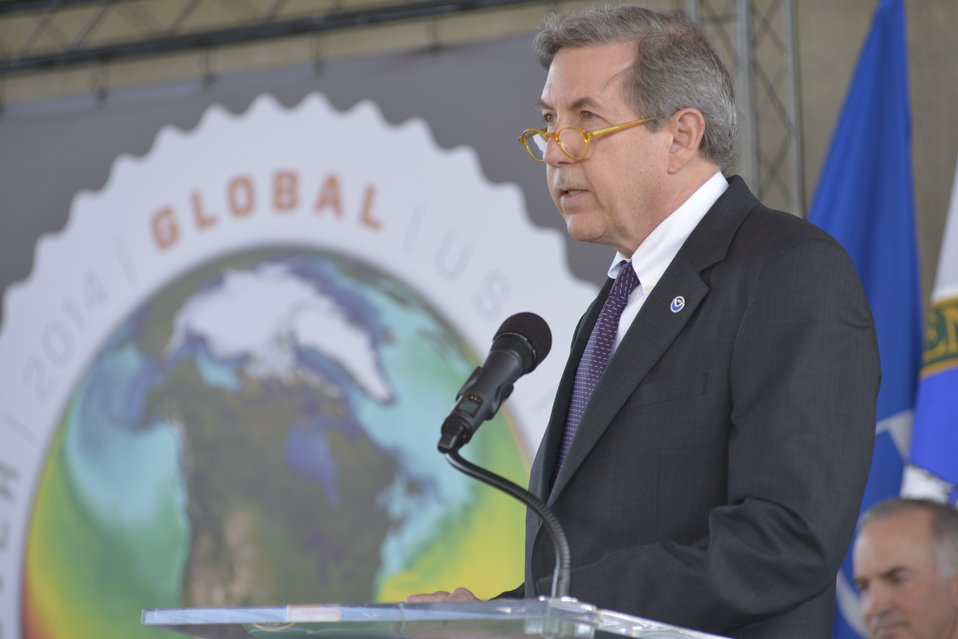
U.S Postal Services introduces a new Global: Sea Surface temperatures forever stamp at the Earth Day program at Department of Energy on April 22, 2014. ( T.Day, C.Williams, C.Anderson II, J.Colin Ph.D, Dr. K. Sullivan, K.Tobin Ph.D, W. Gicher Jr)